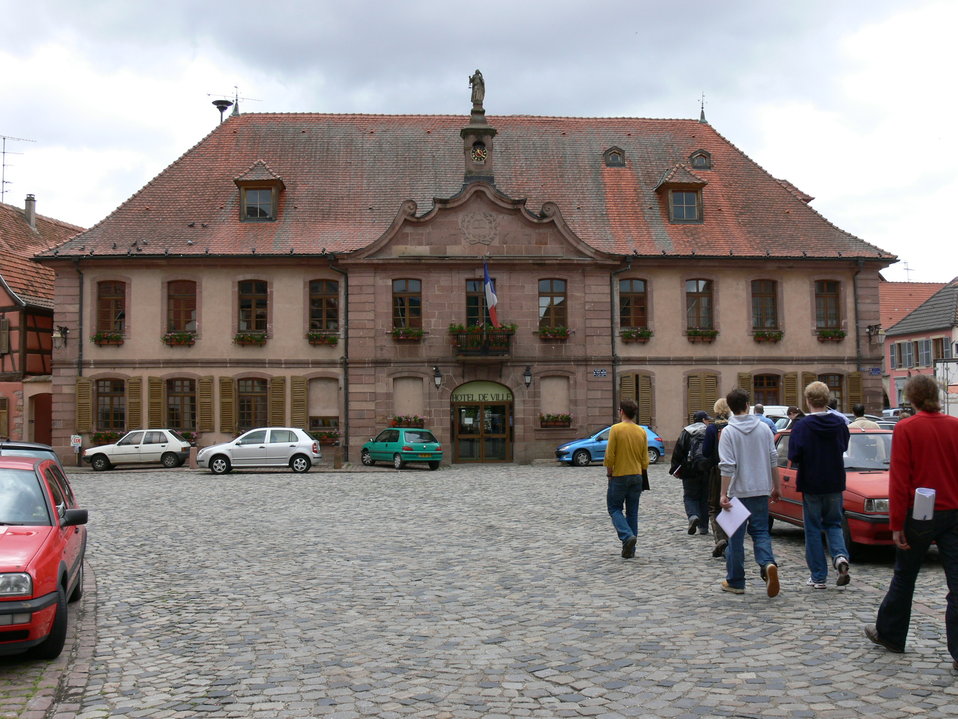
Rathaus (Hôtel de Ville) von Bergheim im Elsass, 2006